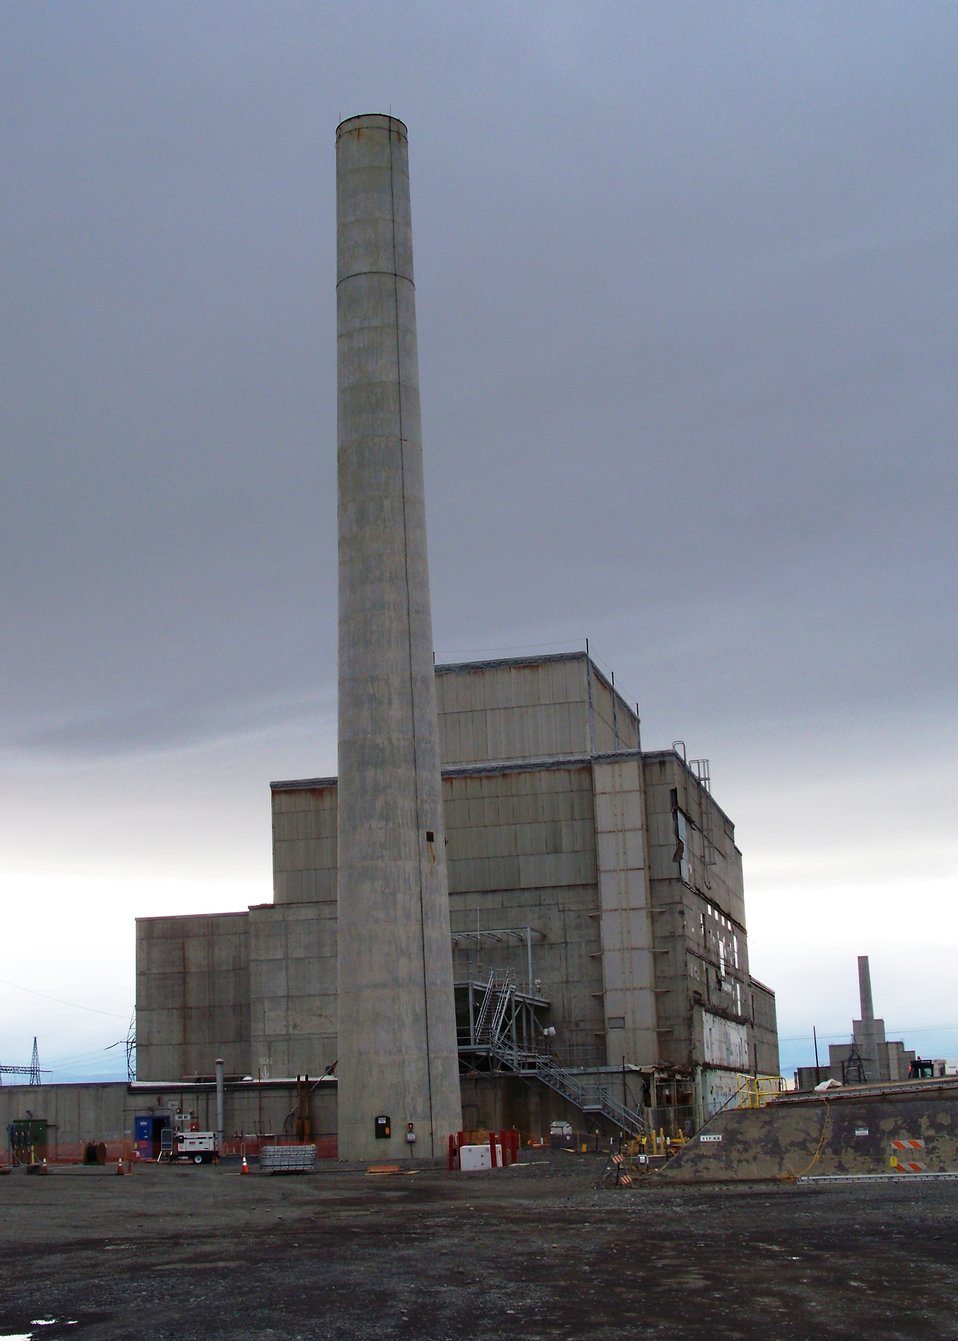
116KE reactor stack before demolition

Check out the video:
www.youtube.com/watch?v=FeX2nl3pl9Q
'Using $420,000 in Recovery Act funds, U.S. Department of Energy and CH2M HILL Plateau Remediation Company demolished the exhaust stack at the K East Reactor.'